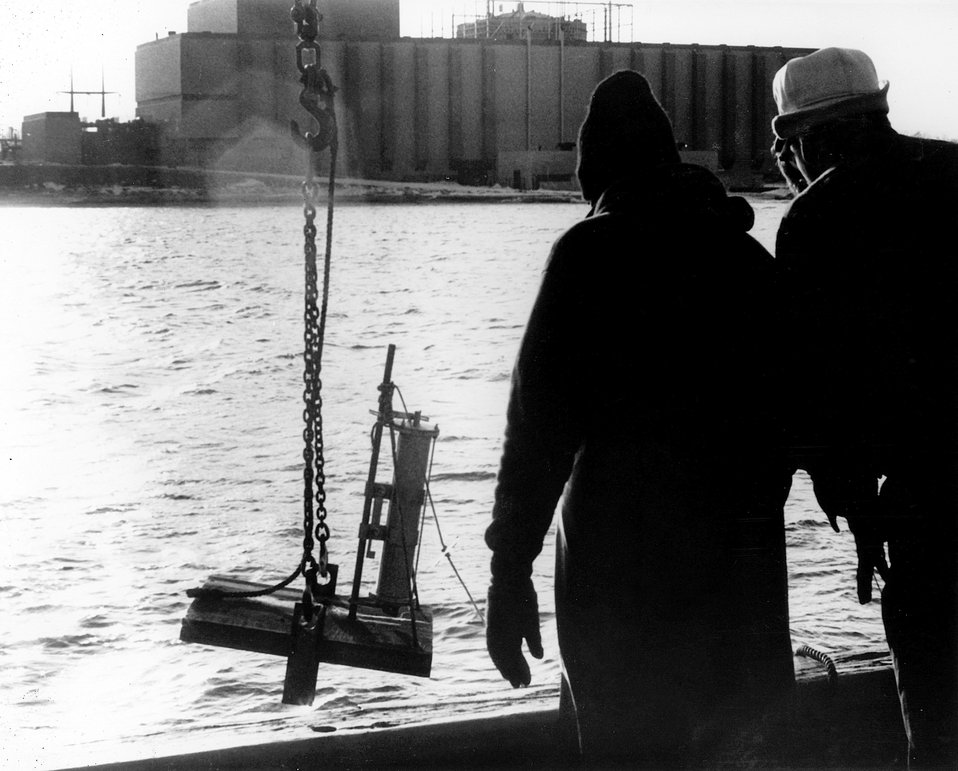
Member of Argonne's Great Lake's Research Team watch as the temperature recording instrument is lowered into Lake Michigan off the Point Beach Nuclear Power Station near Two Rivers, Wisconsin.
c.1972